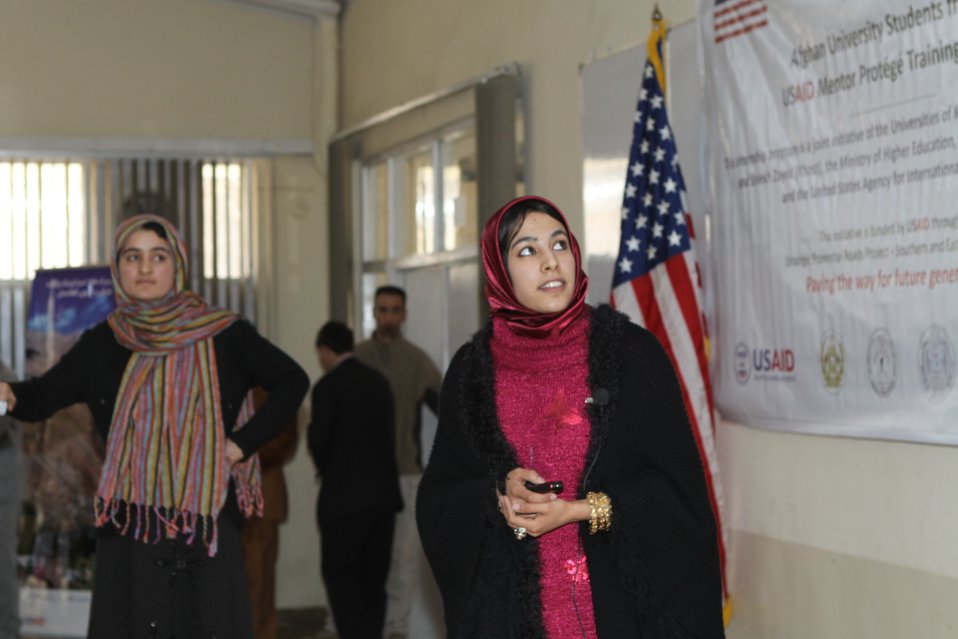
Female University Students Complete Internship

Kabul, Afghanistan | March 16, 2011 – In response to a demand for qualified Afghan engineers, Kabul University celebrated completion of an intensive five-month Mentor Protégé Training Program today by 10 female fourth year university students. The Training Program is a joint effort between the Government of the Islamic Republic of Afghanistan, the U.S. Agency for International Development (USAID), and the Universities of Kabul, Kandahar, Alberoony in Kapisa, Shiekh Zayed in Khost. The graduation ceremony highlighted collaboration with these national institutions in building the technical skills of young Afghans, made possible by USAID.

Four of the interns are engineers, while the remaining six are from the faculties of computer science, economics, and psychology.

Speaking about the event, H.E. Minister of Public Works Abdul Qudus Hamidi said, “The future of Afghanistan lies in developing the skills of our youth, and the engineering skills of these graduates today represent a small but important step forward for the country.”

Keynote speakers at the ceremony included H.E. Deputy Minister of Higher Education Abdul Rahim; USAID Senior Deputy Mission Director Robert Hellyer; and Chancellor of Kabul University Professor Hamidullah Amin. Approximately 150 people, including current and former students attended the graduation.

Launched last year, the Mentor Protégé Training Program has provided qualifying students the opportunity to intern with USAID’s Strategic Provincial Roads-South and East Afghanistan project and gain practical experience in a real work environment. The goal of the program was to offer interns the opportunity to gain hands-on experience to reinforce their formal studies. A total of 30 students from four national universities have benefitted from this program.

“The promotion of women’s rights is integrated into the overall U.S. Government development strategy and can be found in key programs, including education, healthcare, security, rule of law, political participation, agriculture, and economic development,” said Robert Hellyer. “The U.S. Government is committed to the Afghan leadership of programs that directly enhance development, particularly as it relates to women’s issues.”

This event also highlighted the learning achievements of students and emphasized the importance of hands-on internship programs. The curriculum is designed to instill students with the knowledge and confidence to qualify for engineering positions upon completion of their fourth year at their respective universities.